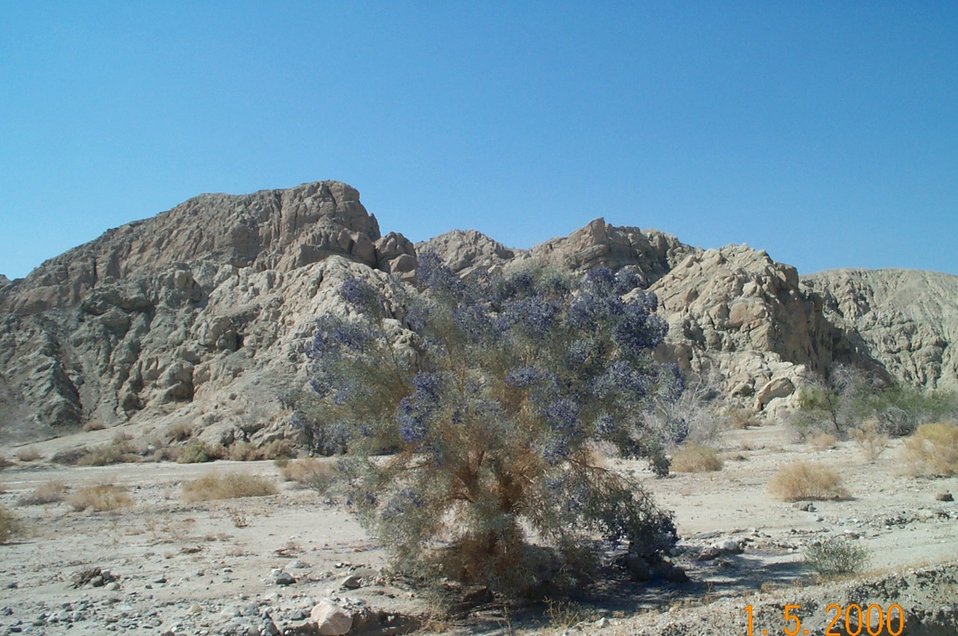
Desert vegetation (smoke tree in bloom)